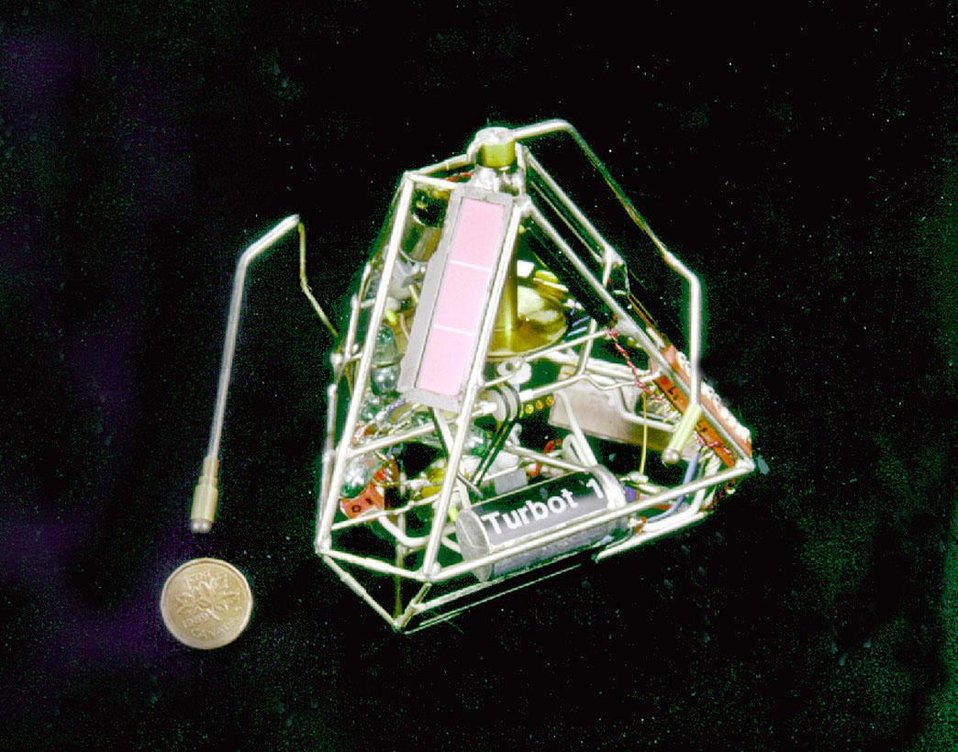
THE TURBOT BEAM (BIOLOGY, ELECTRONICS, AESTHETICS, AND MECHANICS) ROBOT.

BEAM, WHICH STANDS FOR BIOLOGY, ELECTRONICS, AESTHETICS AND MECHANICS, REFERS TO THE APPROACH TO ROBOTICS PIONEERED BY BEAM FOUNDER, LANL SCIENTIST MARK TILDEN. BEAM ROBOTS ARE MODELED MORE ON THE SIMPLE, REPETITIVE BIOLOGICAL PROCESSES OF INSECTS THAN THE COMPLEX, HUMAN-LIKE OPERATIONS THAT ARE THE GOAL OF TRADITIONAL ROBOTS.